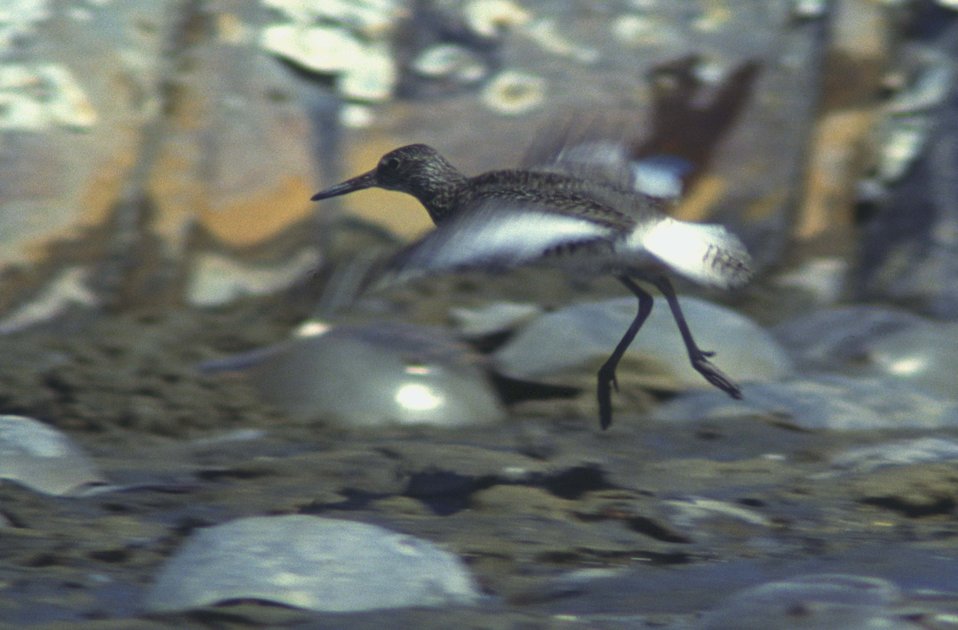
Willet Takes Off

Pt. Mahon, Delaware.